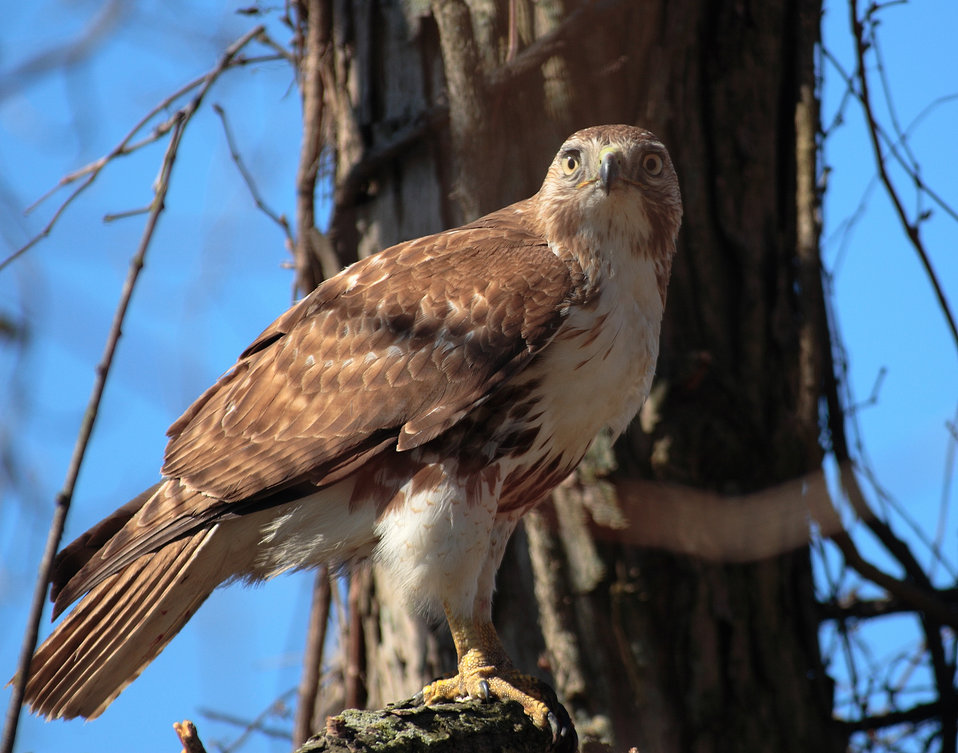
Red-tailed hawk at John Heinz National Wildlife Refuge in Philadelphia, Pennsylvania.